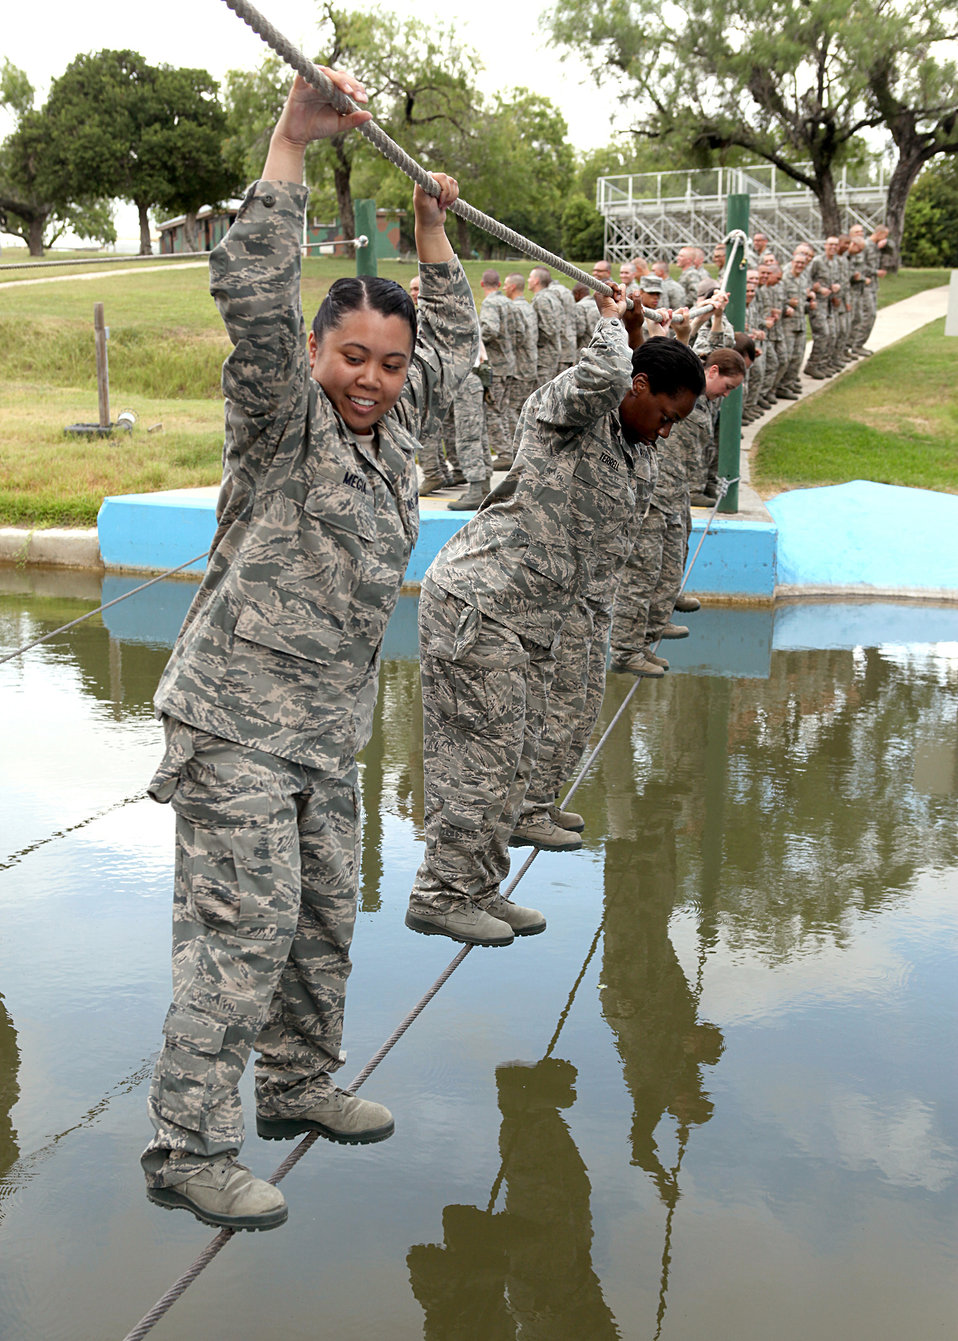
Trainees take on confidence course

Air Force Basic Military Training trainees from the 320th Training Squadron cross a cold water pool June 30, 2010, at the obstacle course on Lackland Air Force Base, Texas. The obstacle course is completed during the fourth week of BMT.